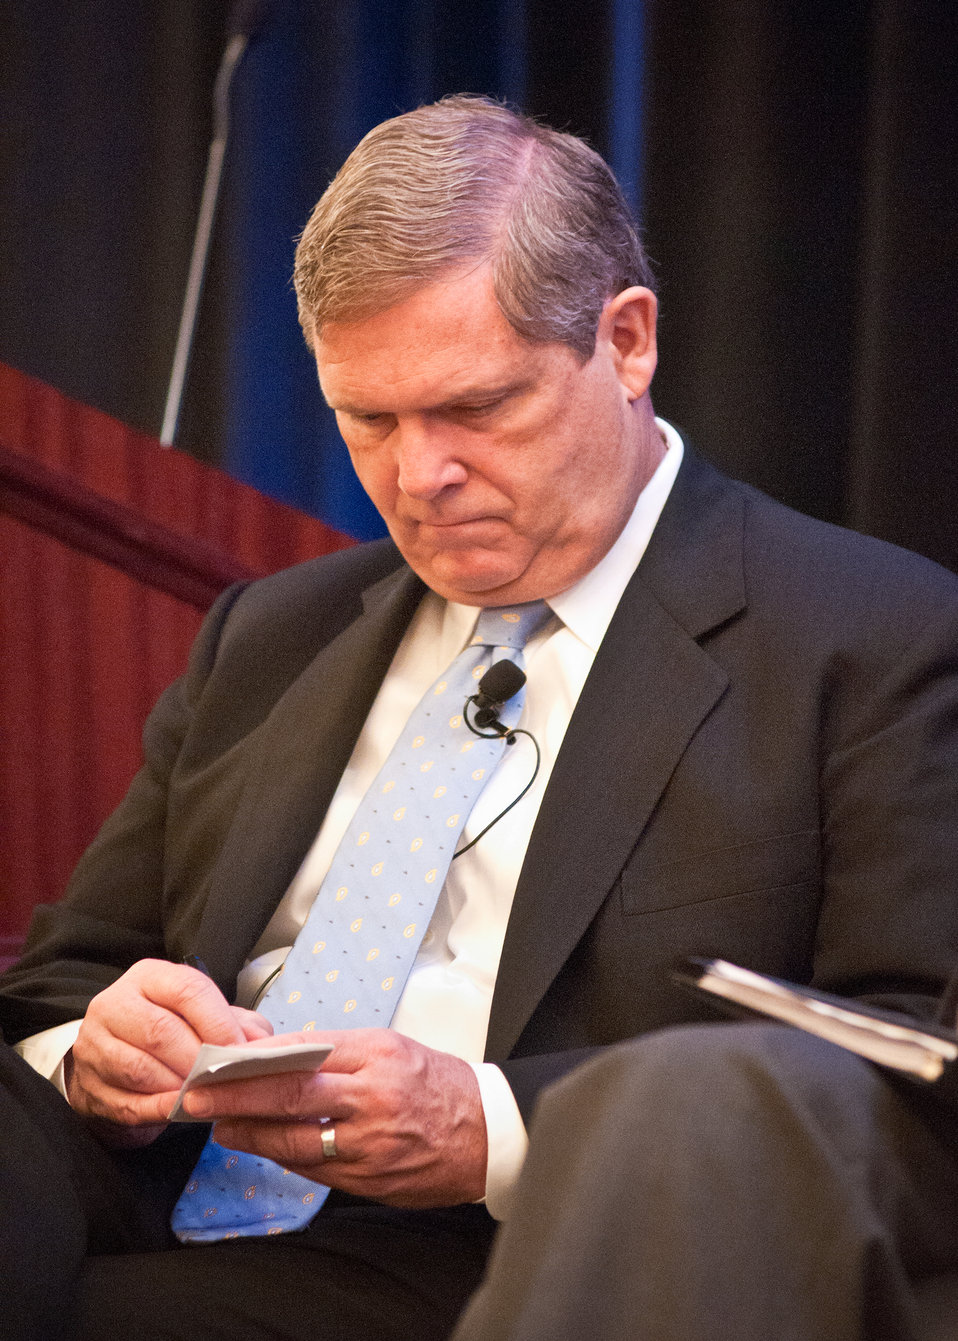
Agriculture Secretary Tom Vilsack’s makes a note of information discussed at the First National Summit on Rural Education and Economic Development held by the Education Commission of the States in Washington, DC, on Wednesday, May 4, 2011. The ECS created by Congress in 1965 includes a range of education policy makers who convene and share education information to build and implement effective education policy. The Department of Agriculture was involved in the summit due to the cooperation of USDA and the Department of Education.